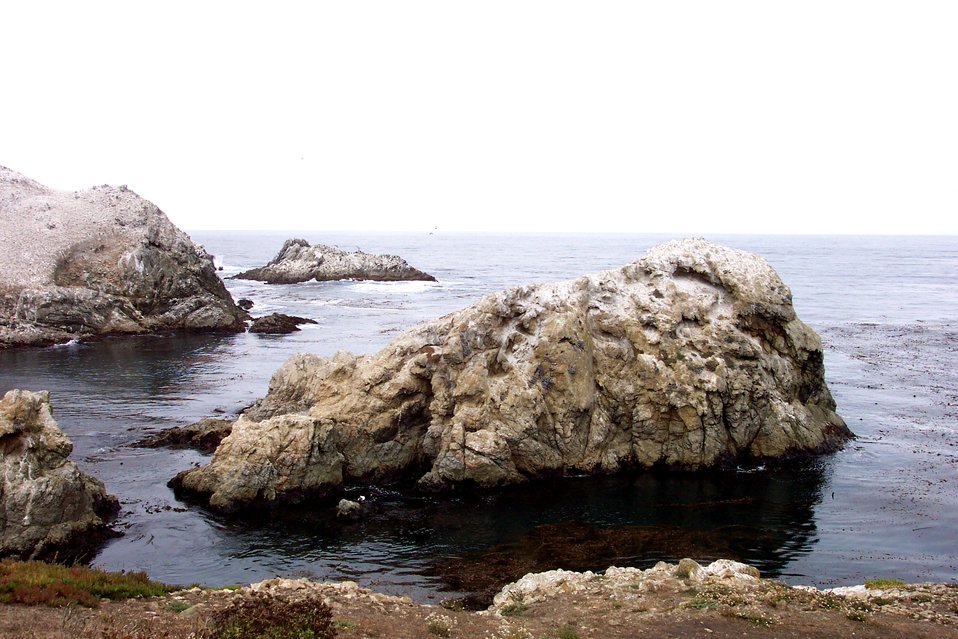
Bird Island Rocks at south end of Point Lobos State Reserve.